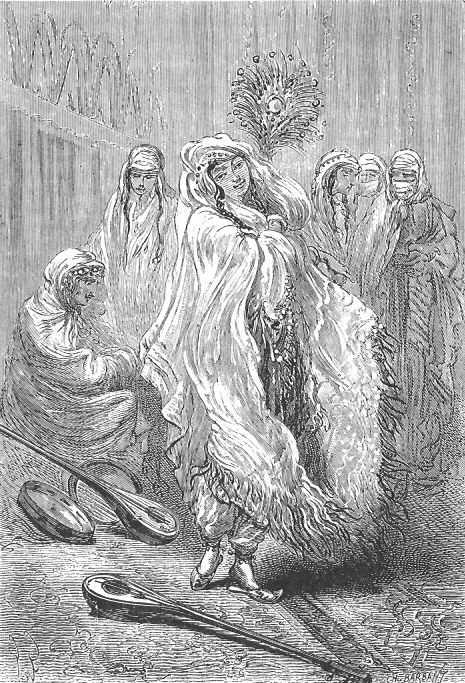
An illustration from the novel 'Michael Strogoff: The Courier of the Czar' by Jules Verne drawn by Jules Férat. Polski: Ilustracja powieści Juliusza Verne'a 'Michał Strogow, kurier carski' autorstwa Julesa Férata. Français : 'Michel Strogoff. Le courier du tzar', Jules Férat. Français : Cette femme, d’origine persane…